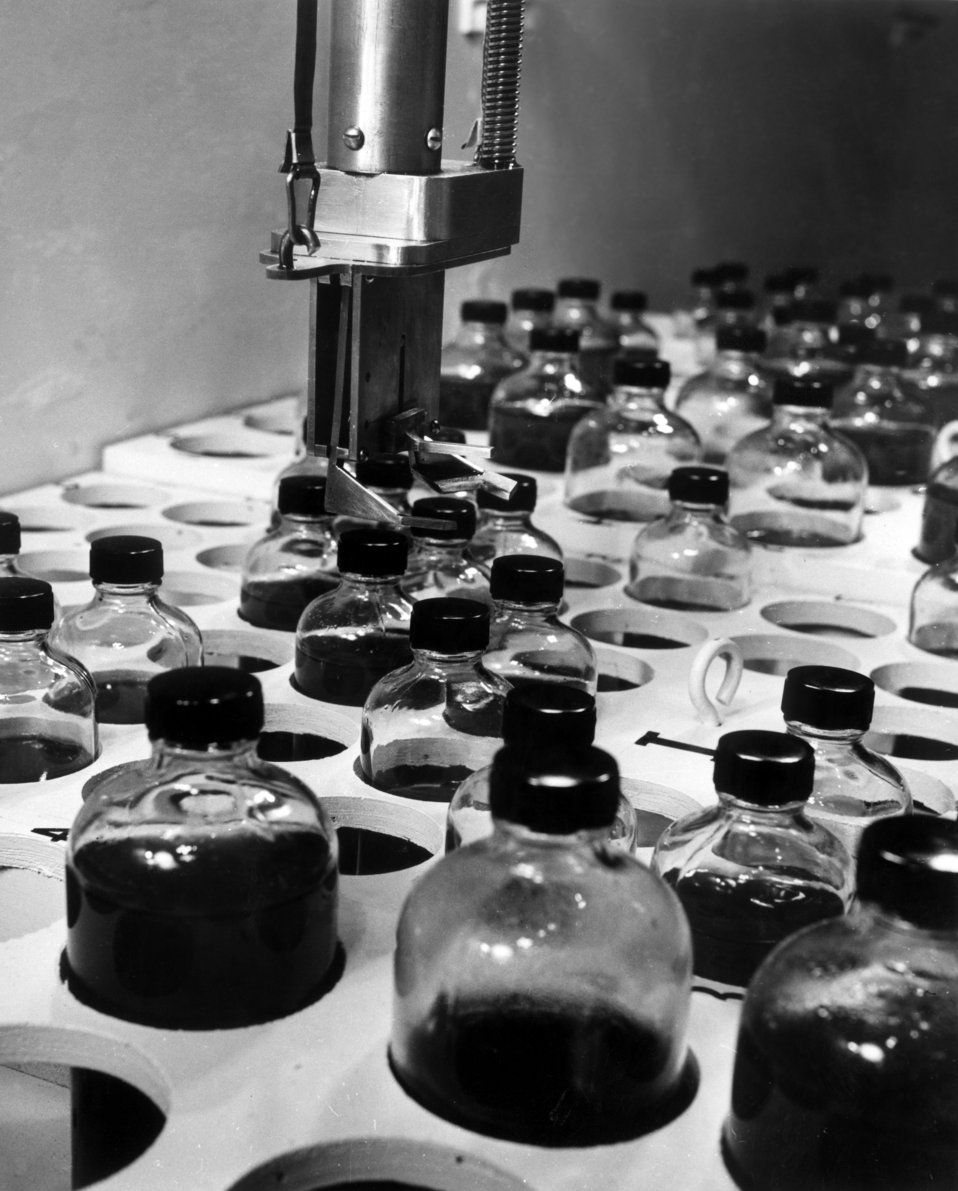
Isotope Packing Storage and Shipping ORNL

5786-3-10 DOE photo Ed Westcott
1950 Oak Ridge Tennessee